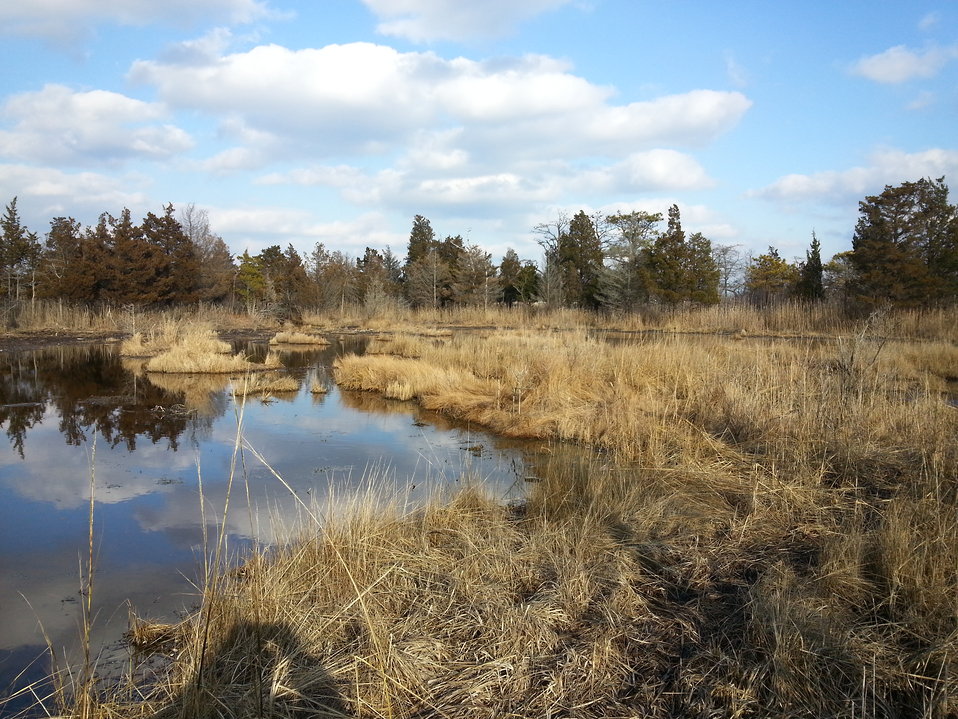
Forsythe After Cleanup - Brick Township

The U.S. Fish and Wildlife Service removed over 280 tons of post-Sandy debris from refuge lands in Brick Township, New Jersey.